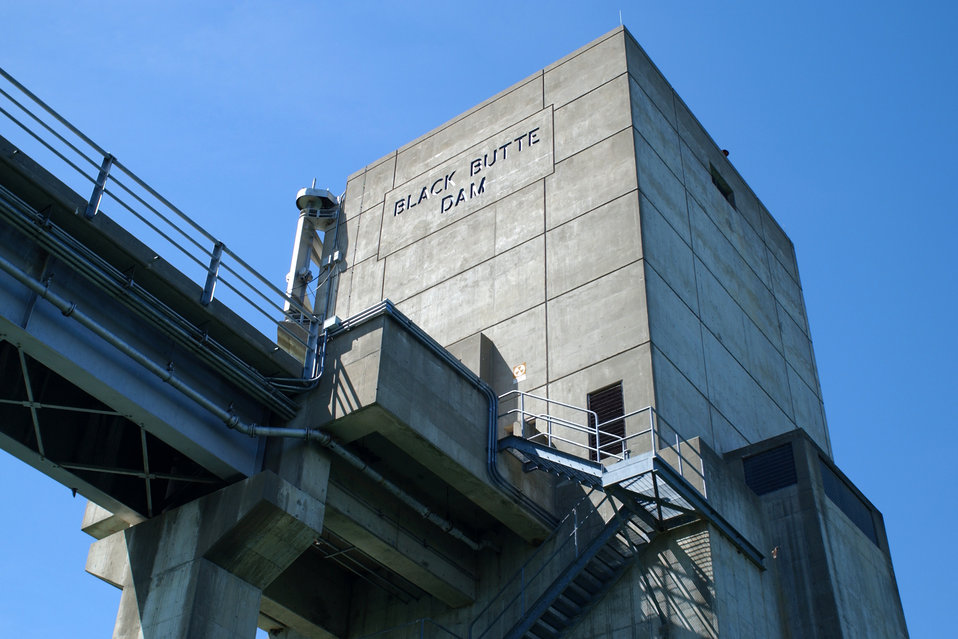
Black Butte Lake Dam

Black Butte Dam, shown here May 24, 2002, is located near Orland, Calif., in Tehama and Glenn counties. Completed by the U.S. Army Corps of Engineers Sacramento District in 1963, the dam impounds Stony Creek, creating Black Butte Lake. When full, the lake has a surface area of 4,460 acres, is seven miles long and boasts a shoreline of 40 miles. The dam reduces flood risk for nearby towns and agricultural lands. Black Butte Lake and Dam are managed by the Sacramento District.